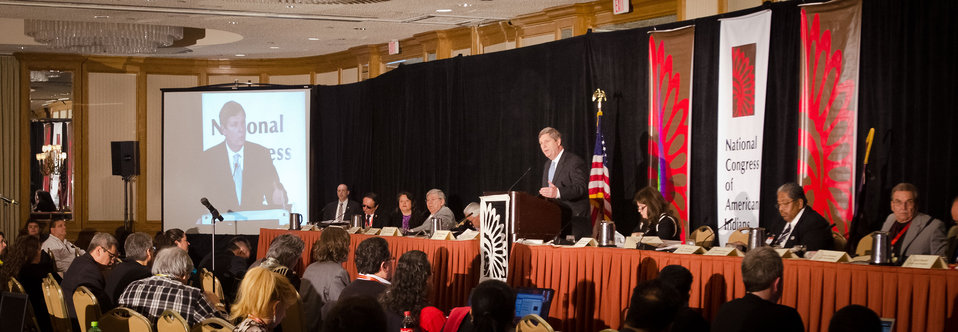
Agriculture Secretary Tom Vilsack today joined tribal leaders from across the nation at the National Congress of American Indians Tribal Nations Legislative Summit in Washington, D. C. on Wednesday March 7, 2012, where he announced investments of $900,000 for positive nutrition education and physical activity habits that can lead to healthier lifestyles. The grants are funded through U.S. Department of Agriculture’s (USDA) Food Distribution Program on Indian Reservations (FDPIR) and will provide nutrition education materials and resources for children and parents in tribal communities in 9 states. USDA chose 17 applicants, located in California, Minnesota, Montana, Oklahoma, South Dakota, Washington, Wisconsin, New Mexico and Alaska to receive FY 2012 funding to develop nutrition education projects that incorporate Dietary Guidelines recommendations within the Native American culture. Secretary Vilsack reiterated USDA’s support to native communities with financial support for electric, broadband and wastewater infrastructure, and provide native families and businesses with home loans and business grants. Secretary Vilsack emphasized USDA’s participation in the First Lady’s Lets Move in Indian Country initiative to combat childhood obesity in tribal communities.